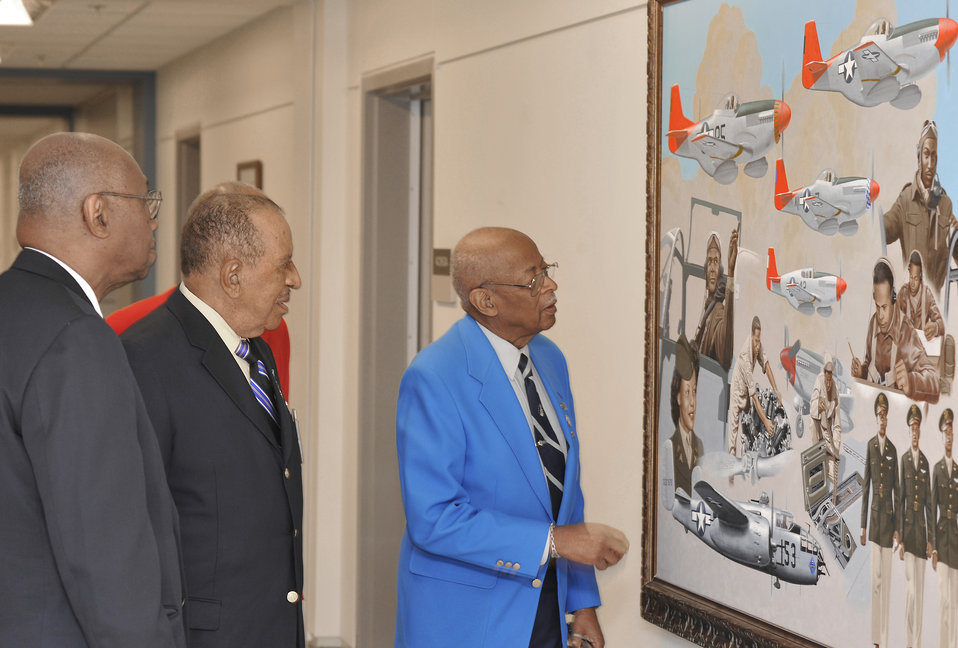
Tuskegee Airmen visit Pentagon

Tuskegee Airmen George Boyd (from left), James Warren, Phillip Broom (in red coat) and Alexander Jefferson admire a painting April 20 depicting fellow Tuskegee Airmen that is on display in the Pentagon. The four Airmen along with retired Lt. Gen. Russell Davis were in Washington to meet with Air Force Chief of Staff Gen. Norton Schwartz and Air Force Vice Chief of Staff Gen. William Fraser III prior to departing on a tour of units in Southwest Asia including the 332nd Air Expeditionary Wing whose origins trace back to the 332nd Fighter Group and the Tuskegee Red Tail Flyers.